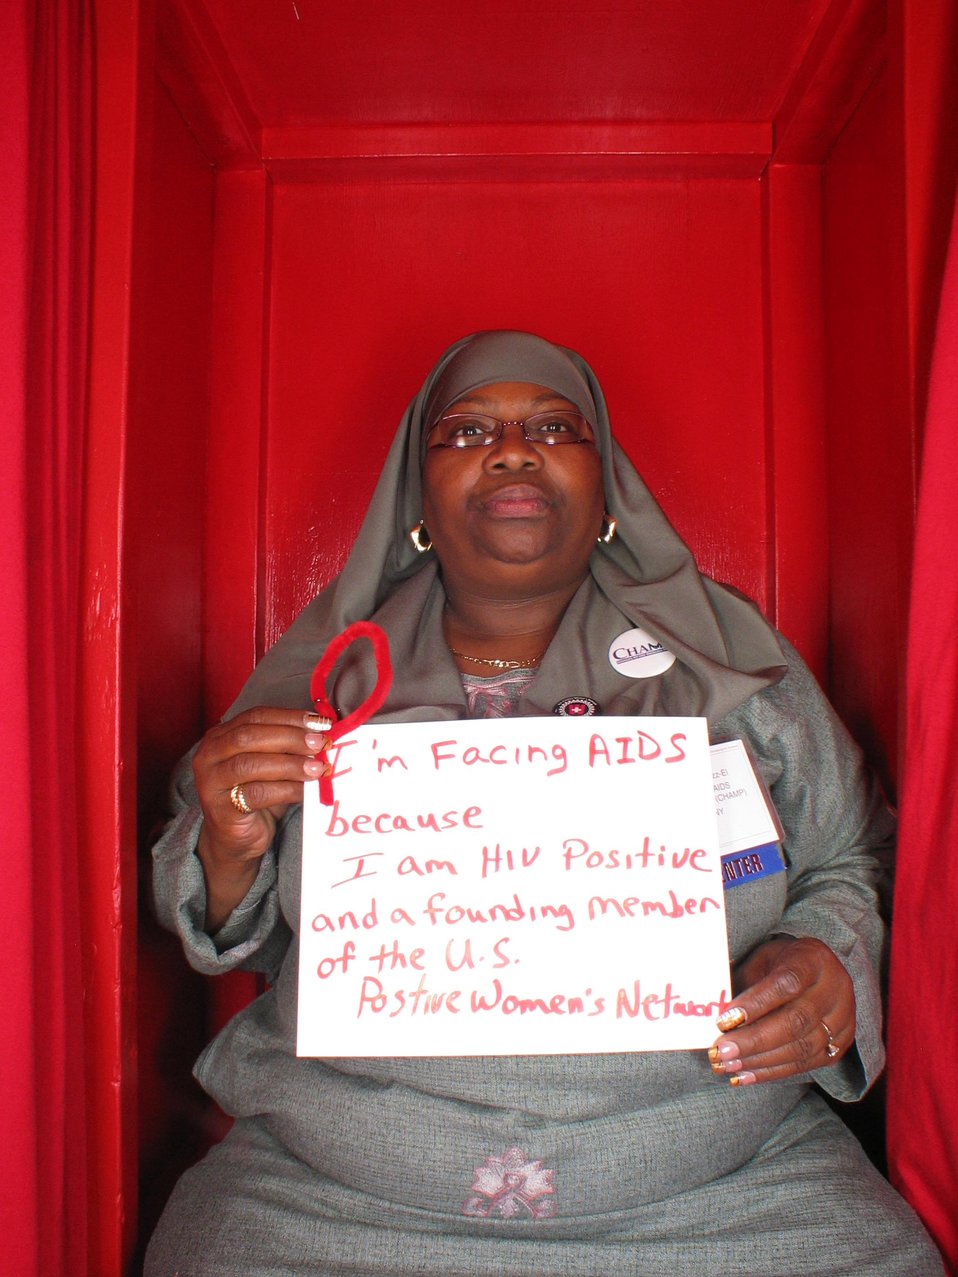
I am Facing AIDS because I am HIV positive and founding member of the US Positive Women's Network.